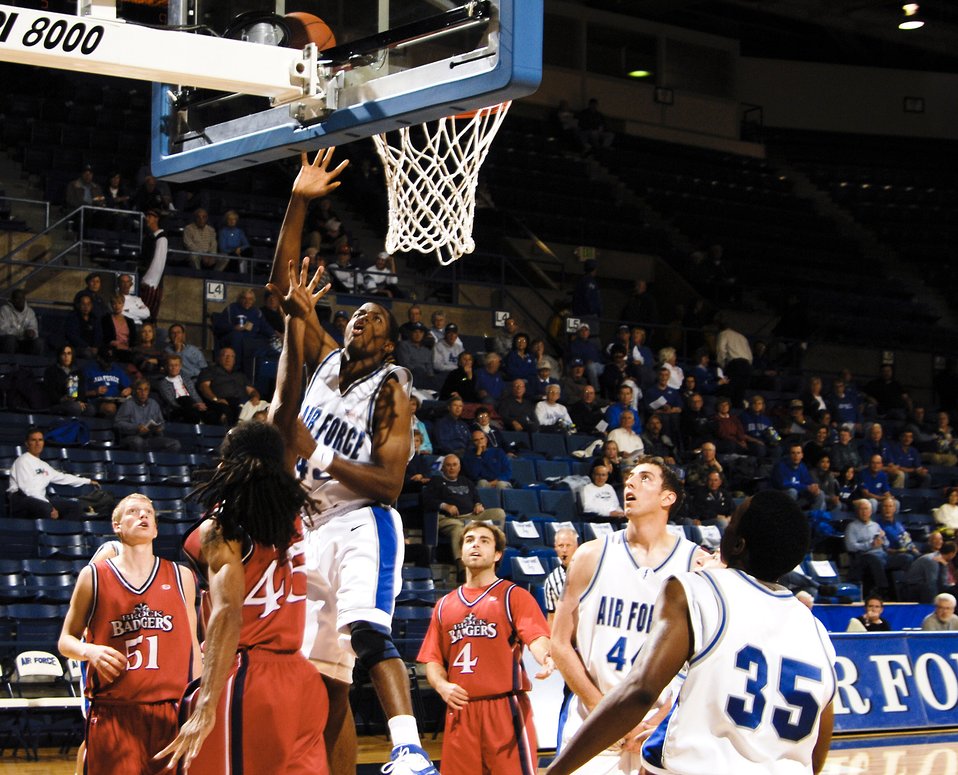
Air Force falls to Brock University, 66-63, in exhibition men's basketball

Junior Anwar Johnson goes up for the layup during the Brock University exhibition basketball game. Air Force was defeated 66-63 by a last second three-pointer by the Badgers. The Falcons open the 2007-08 regular season on Nov. 9 in the Air Force Classic at Clune Arena.